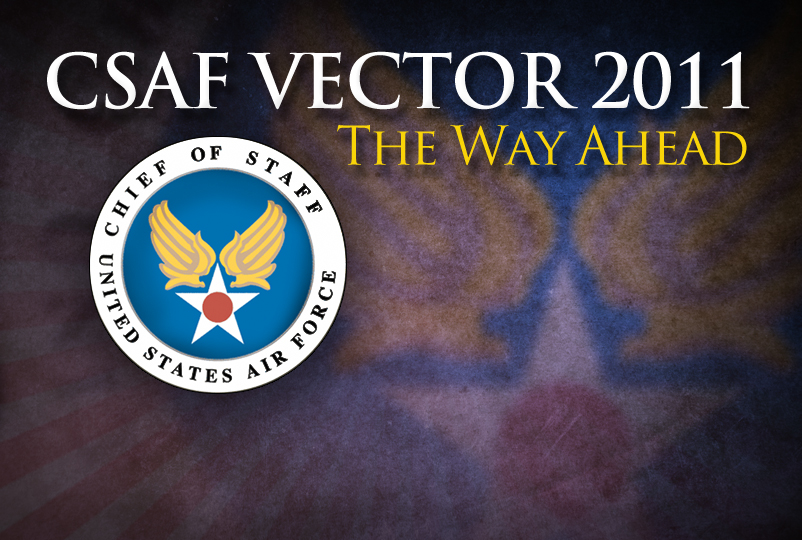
CSAF Vector